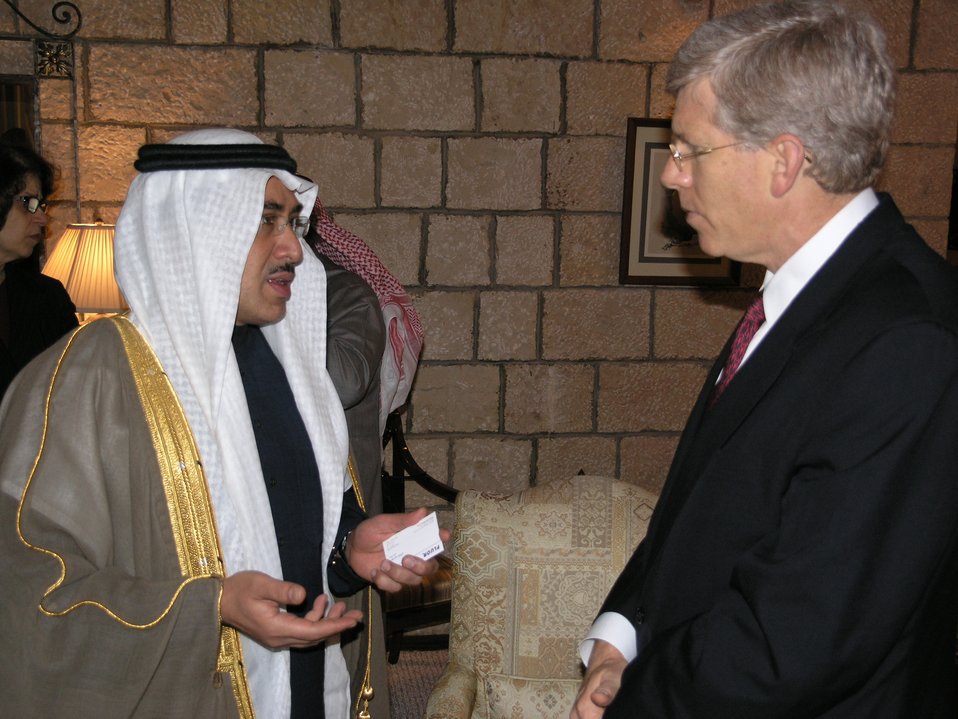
Deputy Secretary Poneman visit with business leaders in Saudi Arabia’s Eastern Province.